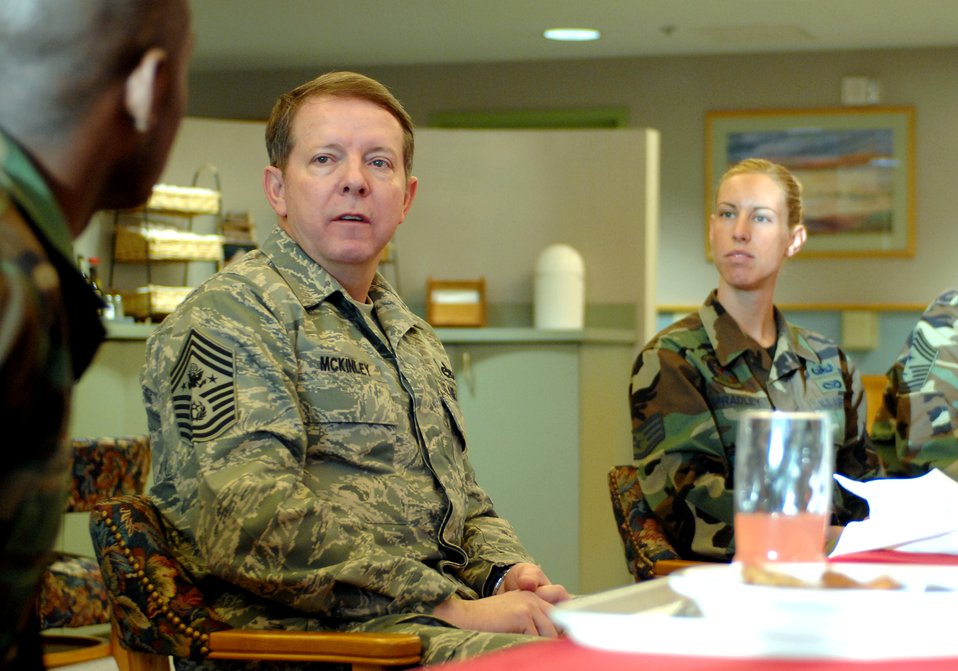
Air Force Week

Staff Sgt. Elizabeth Spradley listens as Chief Master Sgt. of the Air Force Rodney J. McKinley speaks during breakfast with Airmen at Luke Air Force Base, Ariz., March 21. The chief visited during Air Force Week, a week-long event designed to thank the community for its support and increase public awareness of the Air Force's mission, capabilities and the professionalism of its Airmen. Sergeant Spradley is assigned to the 56th Civil Engineer Squadron Explosive Ordnance Disposal Flight.